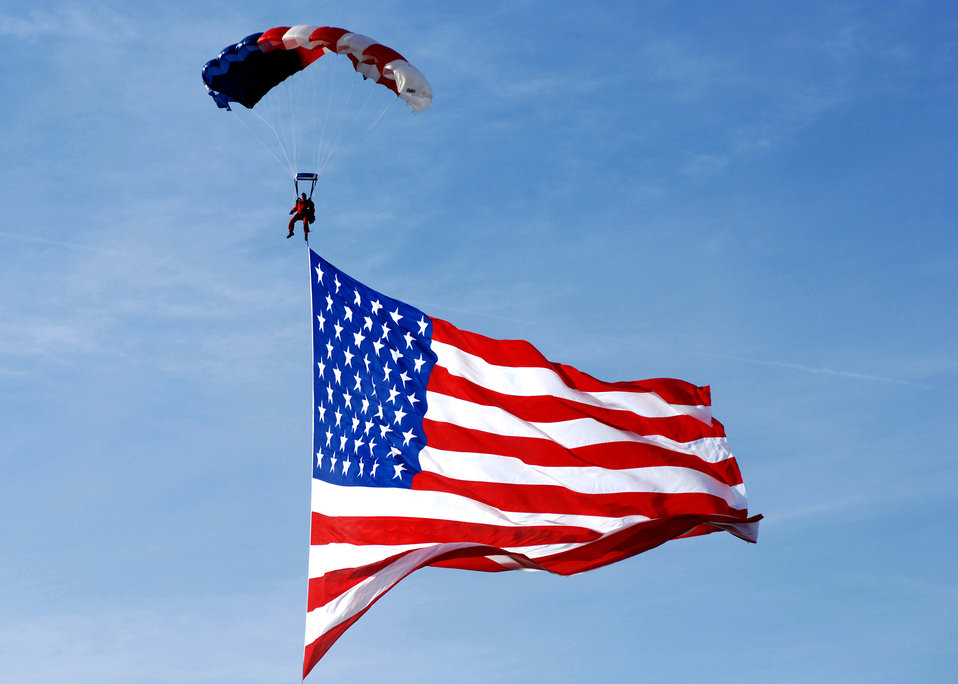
Air Force Heritage Week wraps up in Columbus

A parachuter drifts to the ground with the American flag during the opening ceremony for the Gathering of Mustands and Legends Sept. 28 at Rickenbacker International Airport in Ohio.